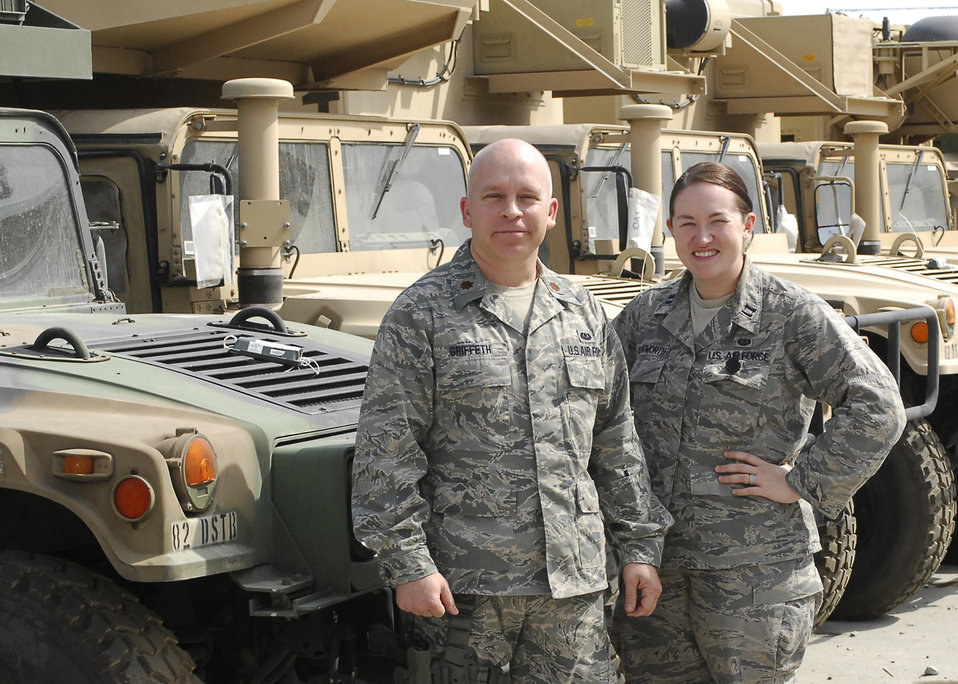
Airmen use football rivalry to help Afghan people

Maj. Tobin Griffeth and Capt. Katie Illingworth are using the hotly contested football rivalry between the University of Texas and the University of Oklahoma to generate donations for the people of Afghanistan at Bagram Airfield, Afghanistan.